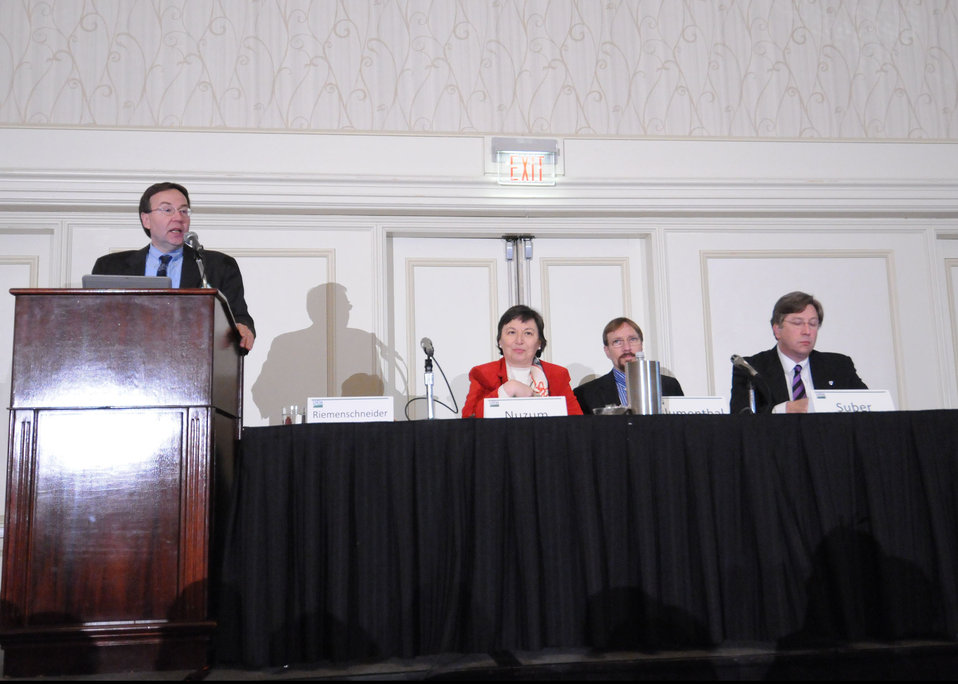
Moderator Robert Riemenschneider, Deputy Administrator, Office of Global Analysis, Foreign Agriculture Service, U.S. Department of Agriculture makes remarks during the breakout session on Foreign Trade and the National Export Initiatives at the World Agricultural Outlook Board Forum, held in Arlington, VA, on Thursday, February 24, 2011. Also, on the panel were (left to right) Janet Nuzum, General Sales Manager, Associate Administrator, Foreign Agriculture Service, USDA, Gary Blumenthal, President and CEO, World Perspectives, Inc., and Tom Suber, President, U.S. Dairy Export Council.